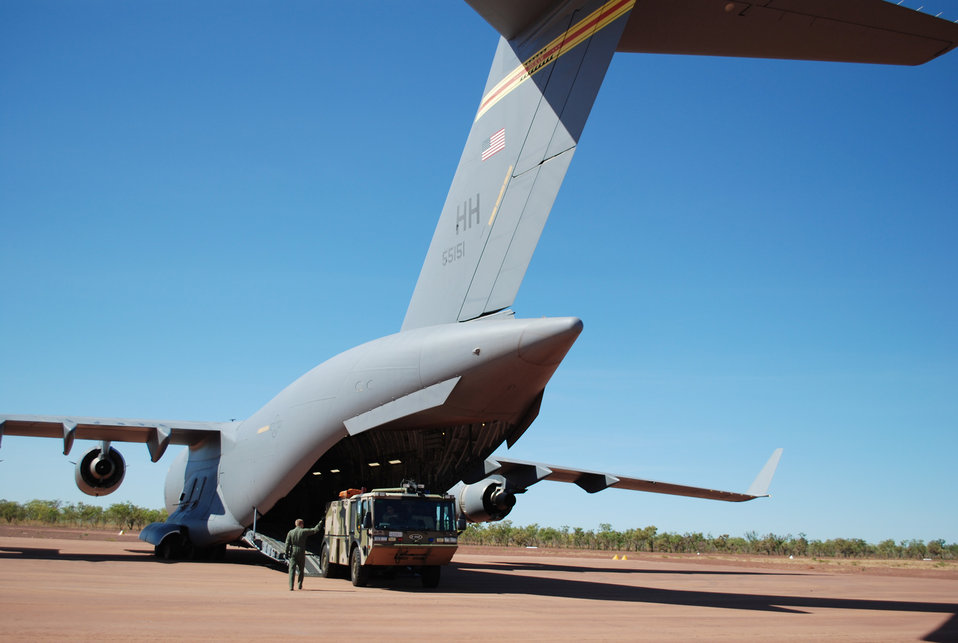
C-17 aircrew delivers Australian fire truck during Talisman Saber 2009

A Royal Australian Air Force E-One Titan is off-loaded July 19 at Bradshaw Field Training Area, Australia during Talisman Saber 2009. The fire truck and a six-member fire team of three U.S. and three Australian firefighters were airlifted via C-17 Globemaster III.